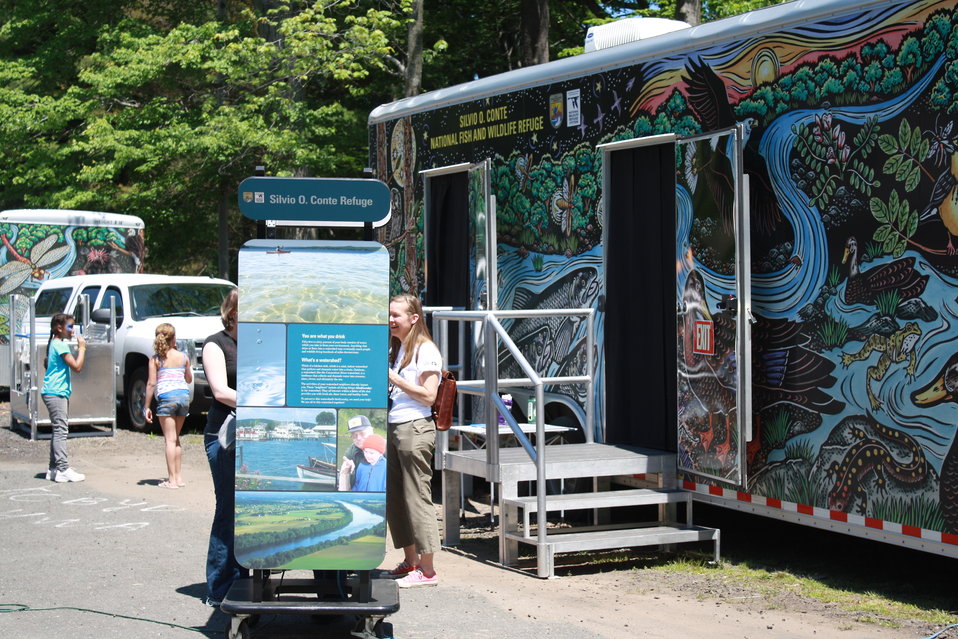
WOW Express at Keney Park in Hartford, Conn.